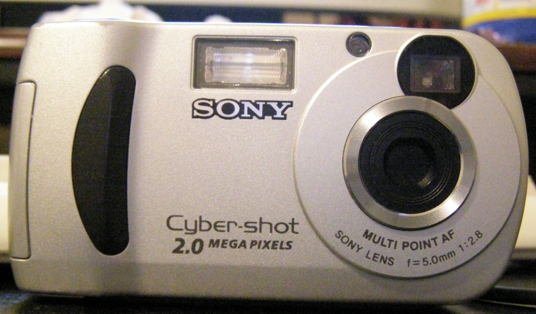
Sony Cyber-Shot DSC-P31 Front View.